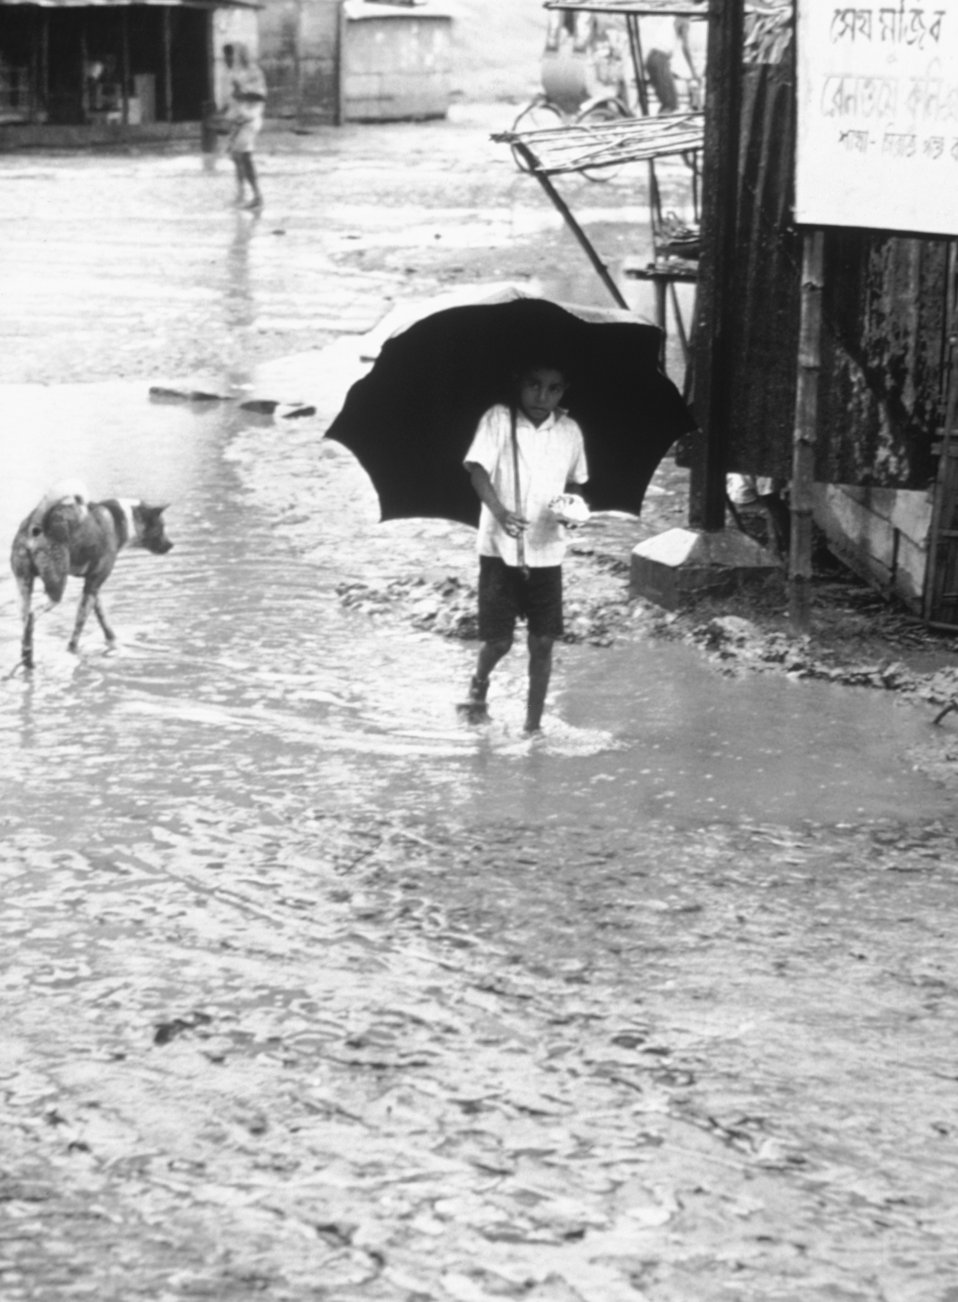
This photograph was taken during a cholera research and nutrition survey in floodwaters of Bangladesh, 1974.